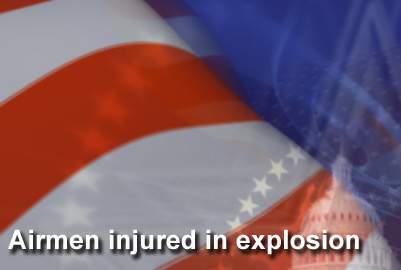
Explosion injures two Airmen

Two Airmen were injured in a landmine explosion Aug. 2 near Kandahar Airfield, Afghanistan.